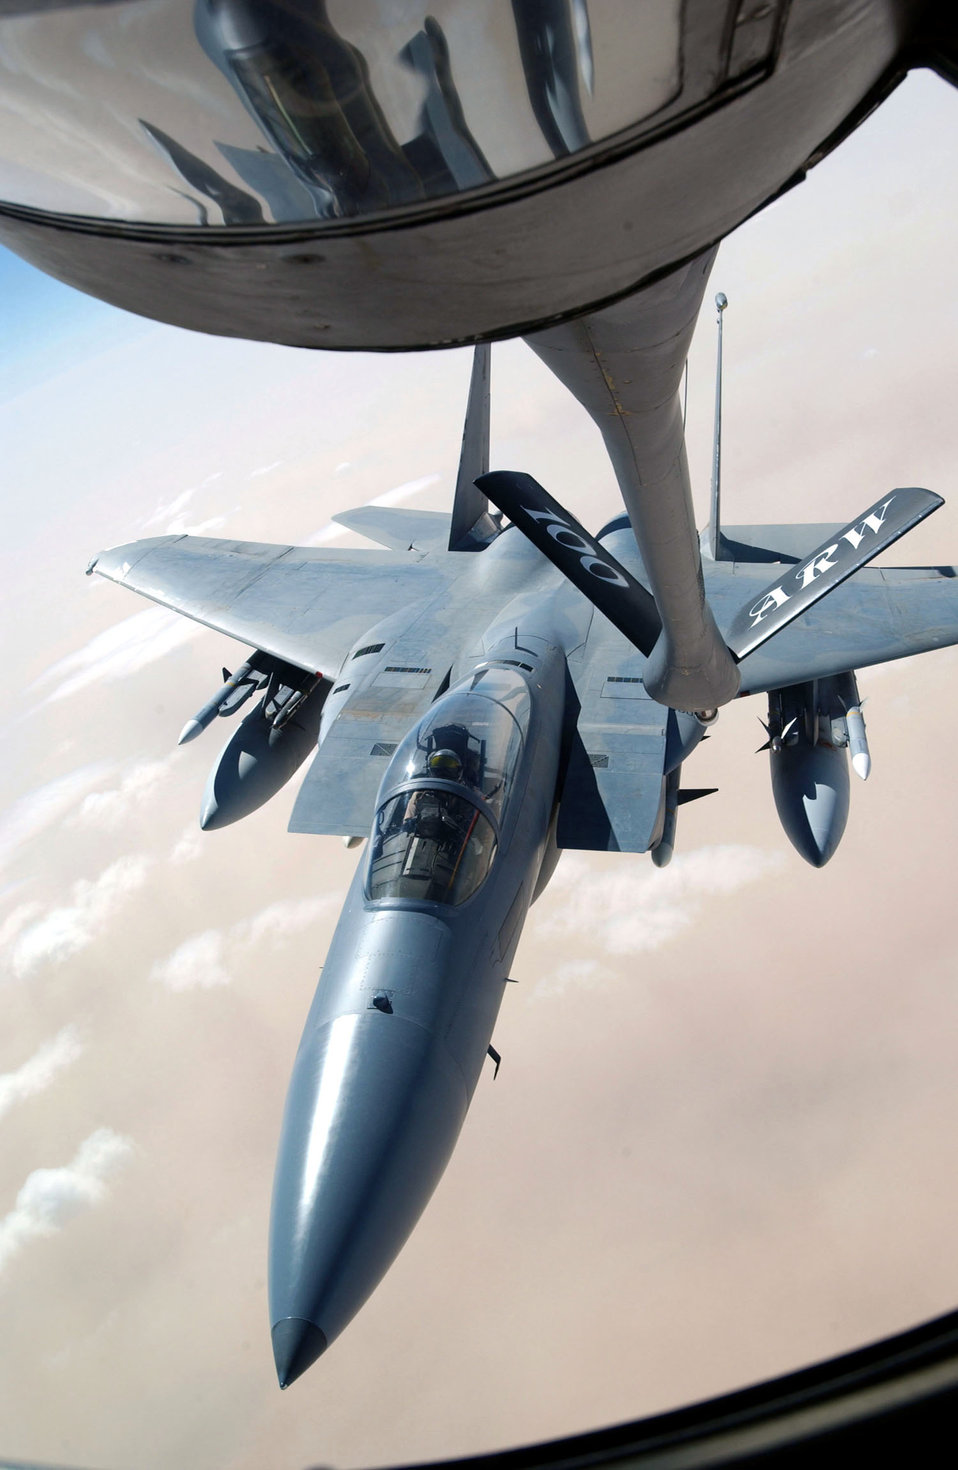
Thirsty Eagle

SOUTHWEST ASIA -- An F-15 Eagle from the 33rd Fighter Wing, Eglin Air Force Base, Fla., receives fuel from a tanker assigned to the 401st Air Expeditionary Wing, operating from a forward-deployed location.